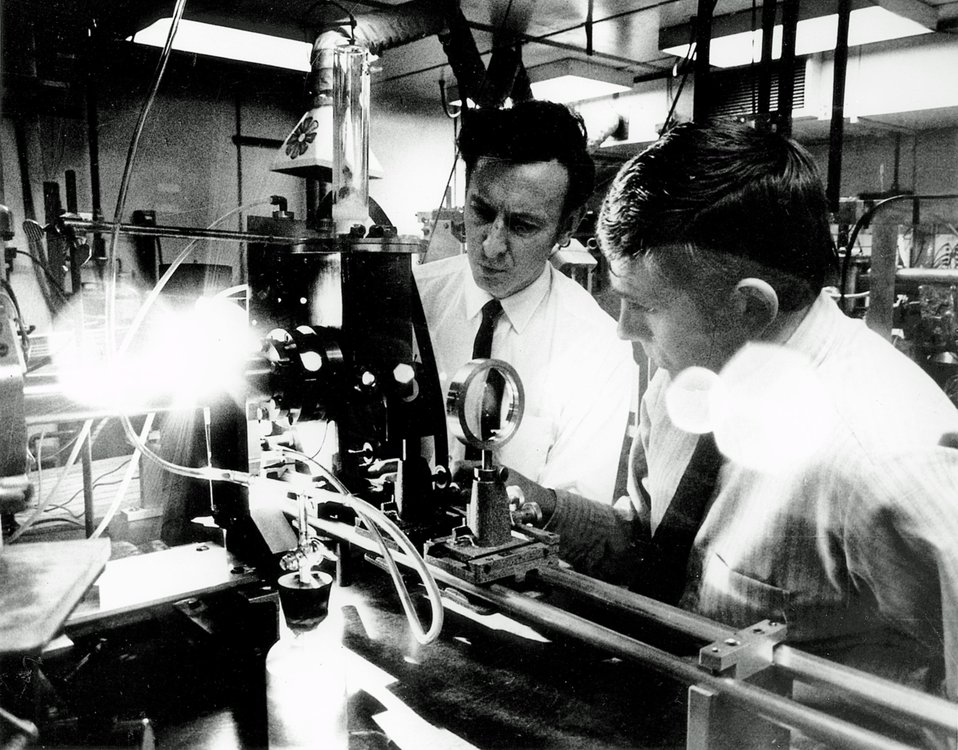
Argonne scientists adjust the components of a spectrometer used in pulsed radiolysis research.
c.1970